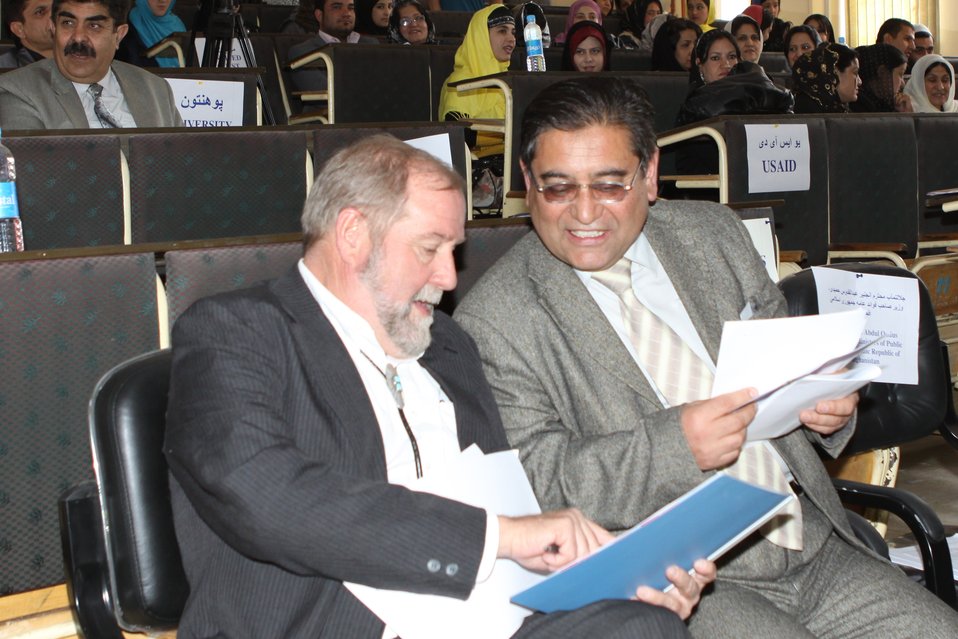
Female University Students Complete Internship

Kabul, Afghanistan | March 16, 2011 – In response to a demand for qualified Afghan engineers, Kabul University celebrated completion of an intensive five-month Mentor Protégé Training Program today by 10 female fourth year university students. The Training Program is a joint effort between the Government of the Islamic Republic of Afghanistan, the U.S. Agency for International Development (USAID), and the Universities of Kabul, Kandahar, Alberoony in Kapisa, Shiekh Zayed in Khost. The graduation ceremony highlighted collaboration with these national institutions in building the technical skills of young Afghans, made possible by USAID.

Four of the interns are engineers, while the remaining six are from the faculties of computer science, economics, and psychology.

Speaking about the event, H.E. Minister of Public Works Abdul Qudus Hamidi said, “The future of Afghanistan lies in developing the skills of our youth, and the engineering skills of these graduates today represent a small but important step forward for the country.”

Keynote speakers at the ceremony included H.E. Deputy Minister of Higher Education Abdul Rahim; USAID Senior Deputy Mission Director Robert Hellyer; and Chancellor of Kabul University Professor Hamidullah Amin. Approximately 150 people, including current and former students attended the graduation.

Launched last year, the Mentor Protégé Training Program has provided qualifying students the opportunity to intern with USAID’s Strategic Provincial Roads-South and East Afghanistan project and gain practical experience in a real work environment. The goal of the program was to offer interns the opportunity to gain hands-on experience to reinforce their formal studies. A total of 30 students from four national universities have benefitted from this program.

“The promotion of women’s rights is integrated into the overall U.S. Government development strategy and can be found in key programs, including education, healthcare, security, rule of law, political participation, agriculture, and economic development,” said Robert Hellyer. “The U.S. Government is committed to the Afghan leadership of programs that directly enhance development, particularly as it relates to women’s issues.”

This event also highlighted the learning achievements of students and emphasized the importance of hands-on internship programs. The curriculum is designed to instill students with the knowledge and confidence to qualify for engineering positions upon completion of their fourth year at their respective universities.